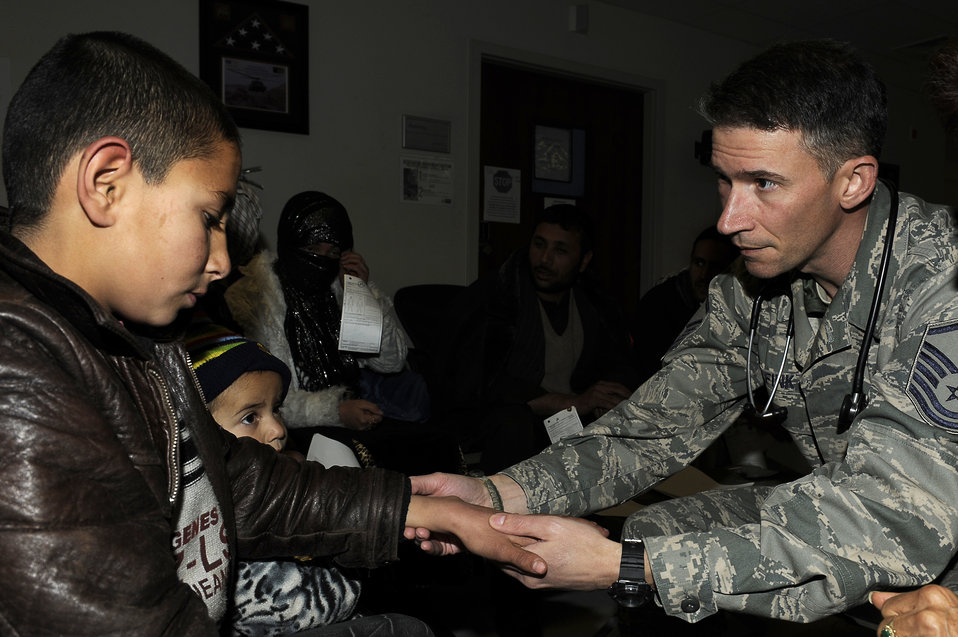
Afghan avalanches

Master Sgt. Jan Fink assesses an avalanche survivor's wrist Feb. 9, 2010, at Craig Joint Theater Hospital at Bagram Airfield, Afghanistan. Dozens of Afghans were taken to Bagram Airfield after avalanches struck a mountain pass in the Parwan Province. Sergeant Fink is assigned to the 455th Expeditionary Medical Group.